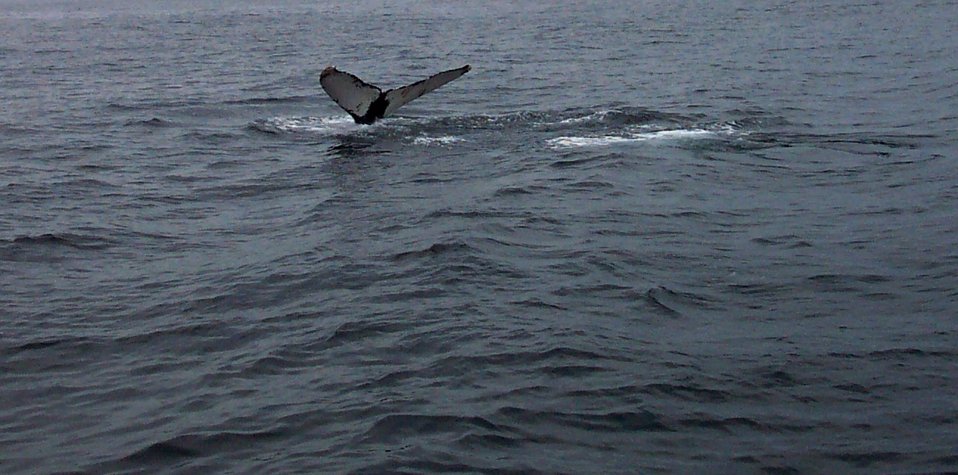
A humpback whale tail in the Gulf of Maine about 20 miles south of Bar Harbor.